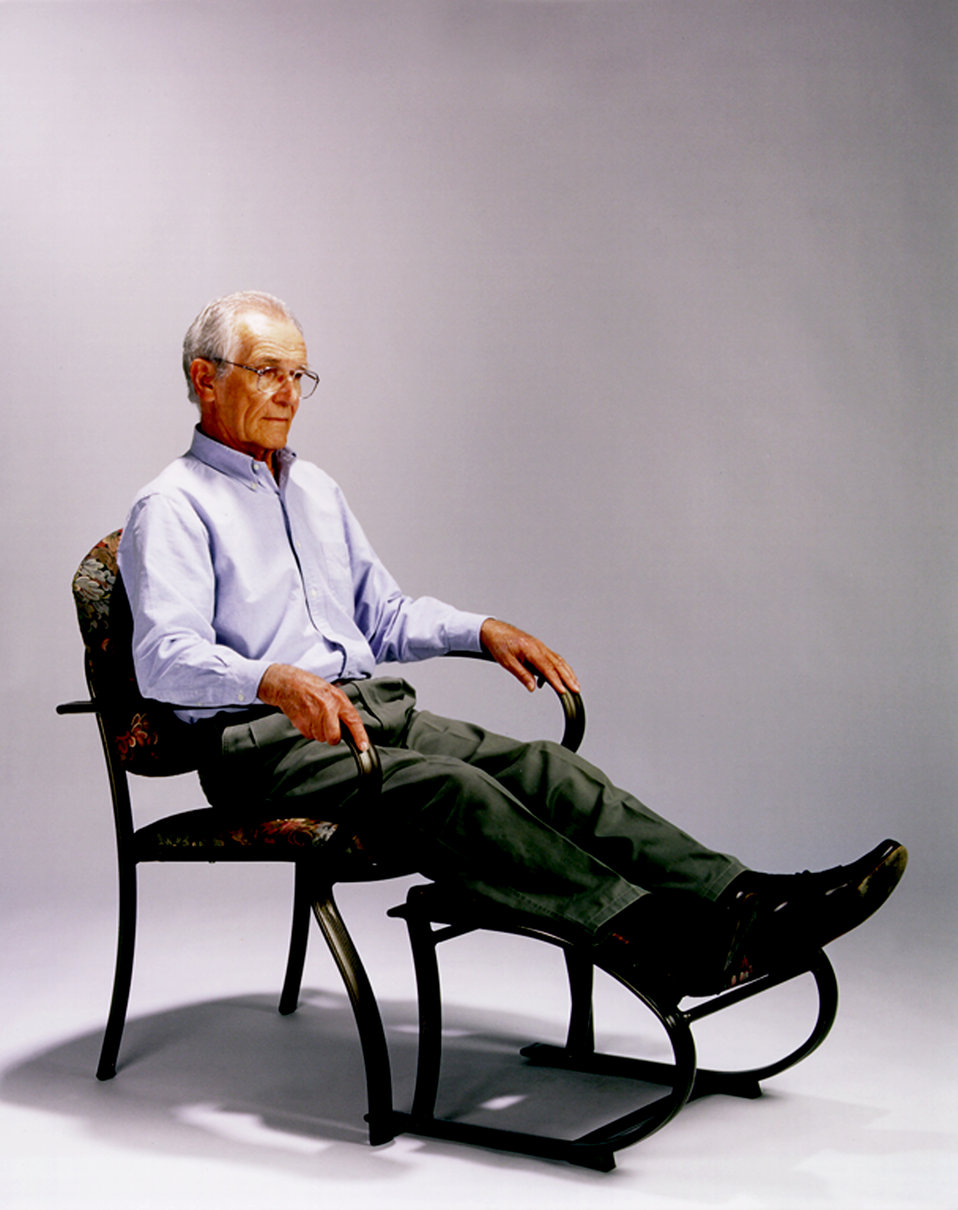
This is one of a series of ten images, (PHIL# 9144 - 9153), depicting one of LifeSpan� Furnishing's line of chairs, designed to make sitting down and rising safer and easier, and sitting more comfortable and supportive. This elderly man was sitting, while placing his feet on the accompanying matched foot rest. These chairs combined aesthetics and function, and were more comfortable for most people, benefiting those who would care for others, by reducing physical exertion and stress needed when assisting others. The user could take advantage of the extended arms for stability when lowering or rising from a seated position. Close attention was paid to many small details including the non-skid rubber feet, and the elimination of pinch points and sharp edges. The LifeSpan� seating product line included four different designs, all based on an extended arm and leg concept that provided users with better leverage and support.